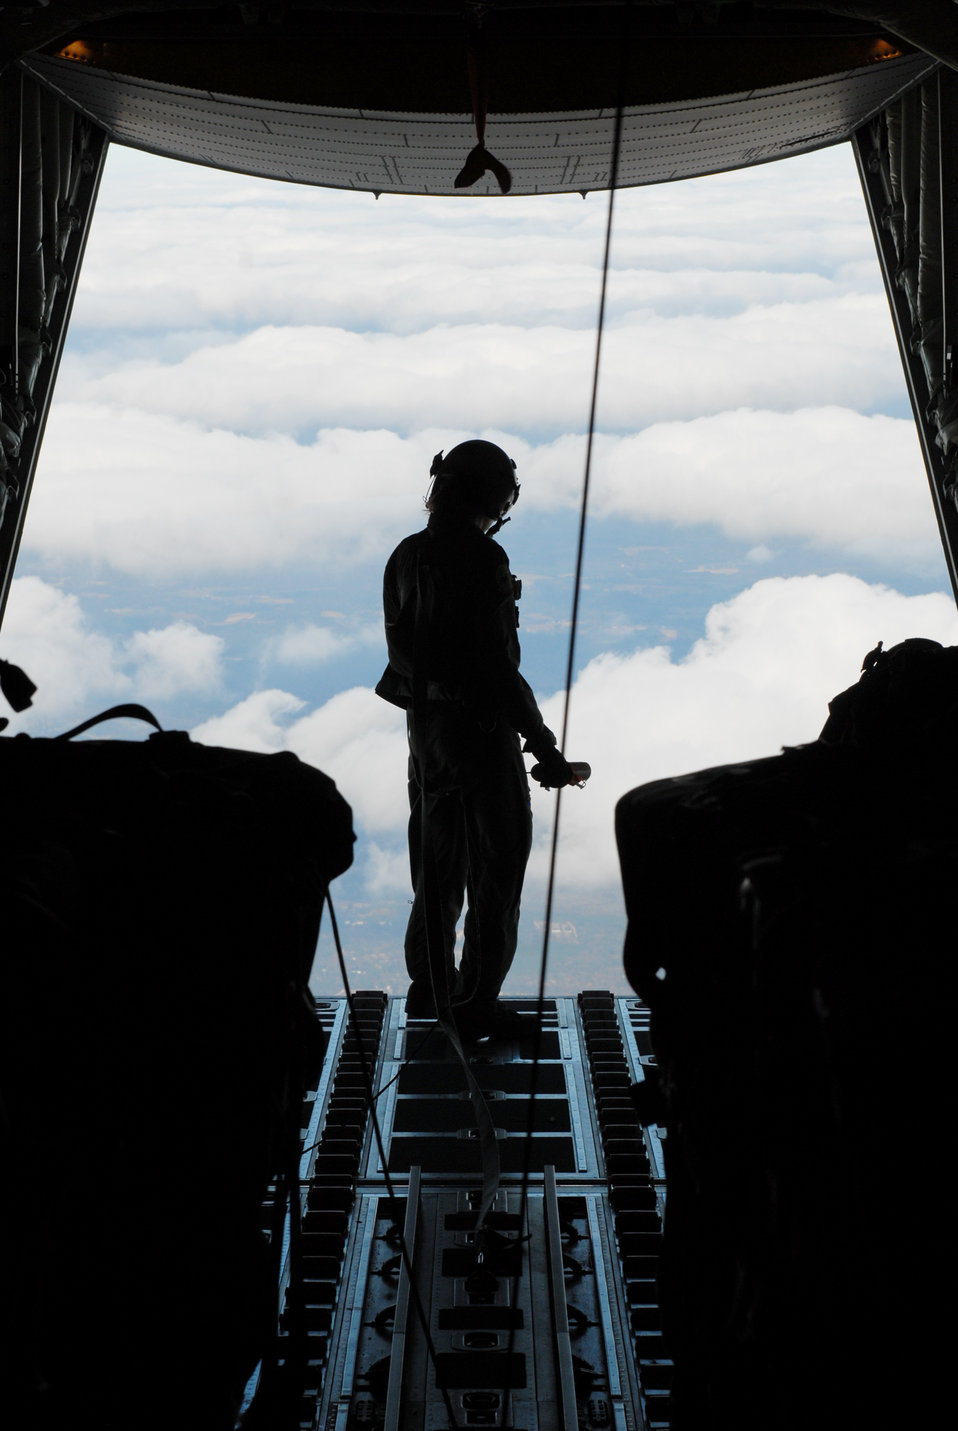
Little Rock officials lead joint force training effort at exercise

Senior Airman Erica Peschel prepares to deploy a dropsonde to measure weather conditions as part of Joint Forcible Entry Exercise 10-01 Oct. 29, 2009, at Pope Air Force Base, N.C. The JFEX focused on cohesive training between the Air Force and Army to reestablish forcible entry capability through airpower. Airman Peschel is a 41st Airlift Squadron loadmaster.